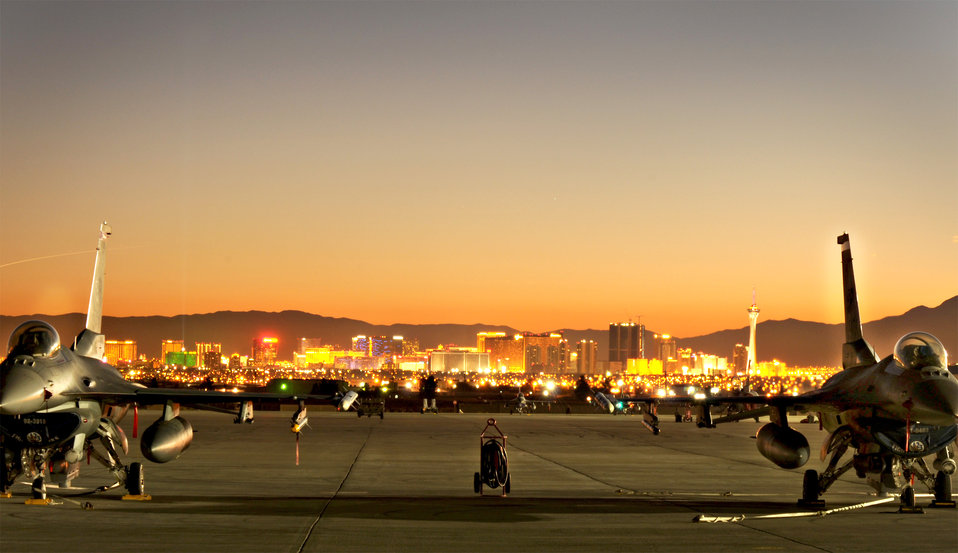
Glory and glamour

F-16 Fighting Falcons sit on the flightline at Nellis Air Force Base, Nev., Jan. 22, 2011, with the Las Vegas skyline in the distance.